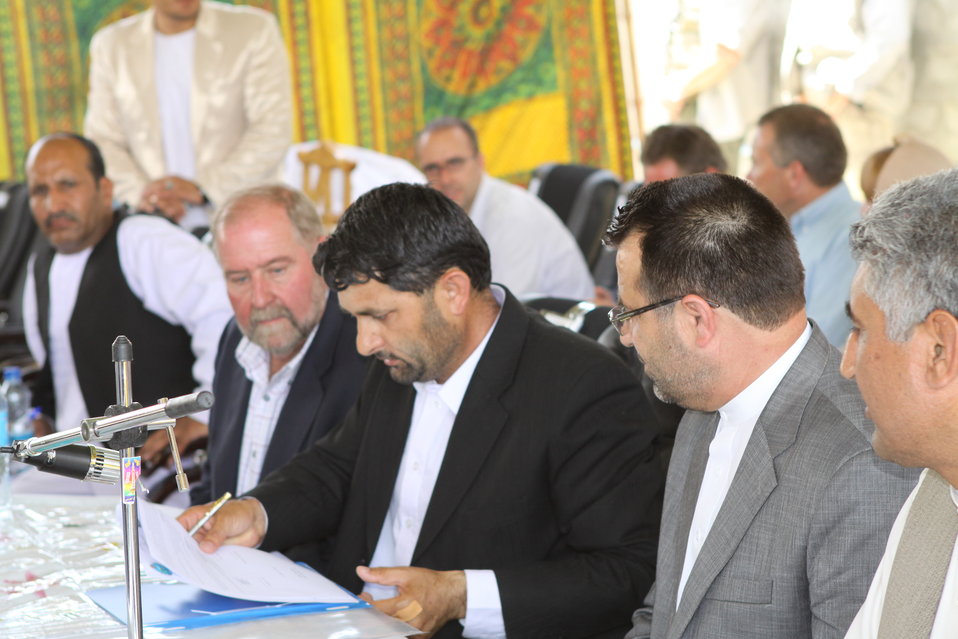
Bolan Poultry Farm